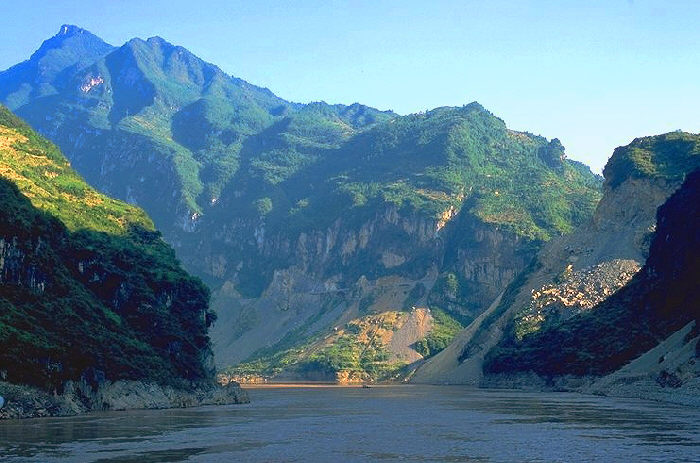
Yangtze River, Three Gorges section.